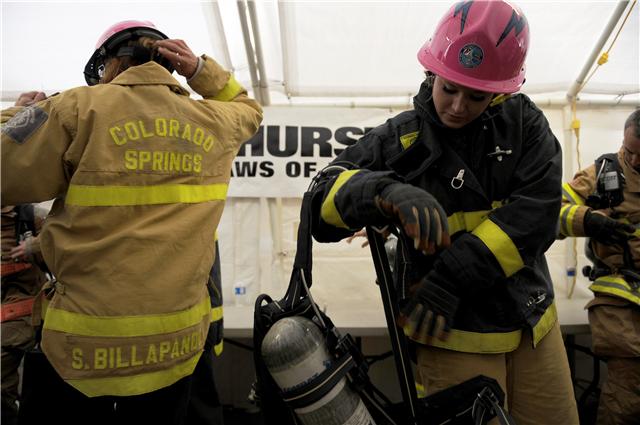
Gearing up

Airman 1st Class Jessica Morehouse puts on gear before she competes in the team relay event Nov. 18, 2009 at the Scott Firefighter Combat Challenge in Las Vegas. Airman Morehouse is assigned to the Air Force Academy, Colorado Springs, Colo.